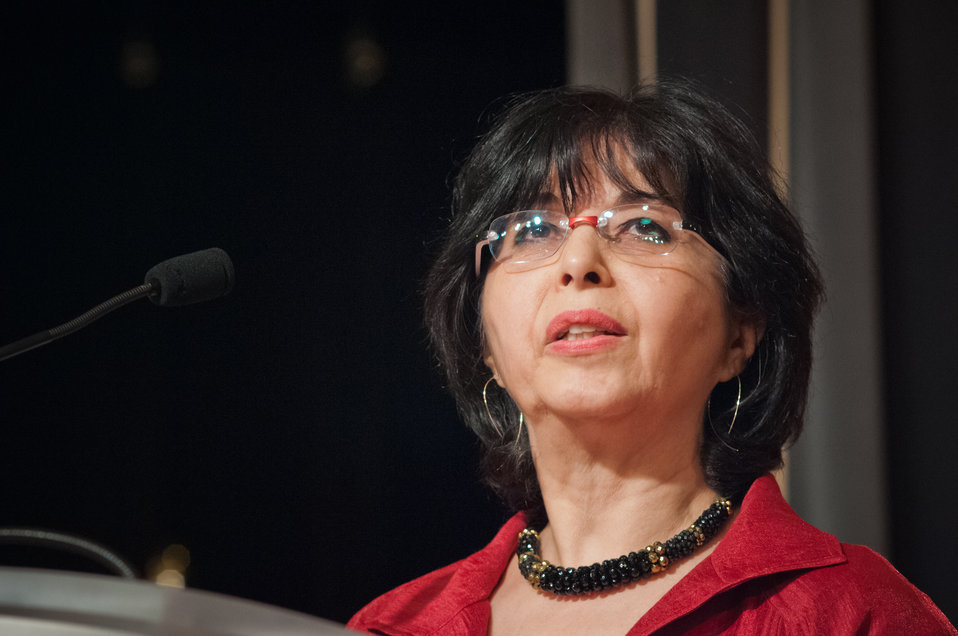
World Bank Economics Data Group Director Shaida Badiee gave the closing remarks at the G-8 International Conference on Open Data for Agriculture in Washington, D.C. on Monday, Apr. 29, 2013. Agriculture Secretary Tom Vilsack announced the launch of a new 'virtual community' as part of a suite of actions, including the release of new data that the U.S. is taking to give farmers and ranchers, scientists, policy makers and other members of the public easy access to publicly funded data to help increase food security and nutrition at the conference.